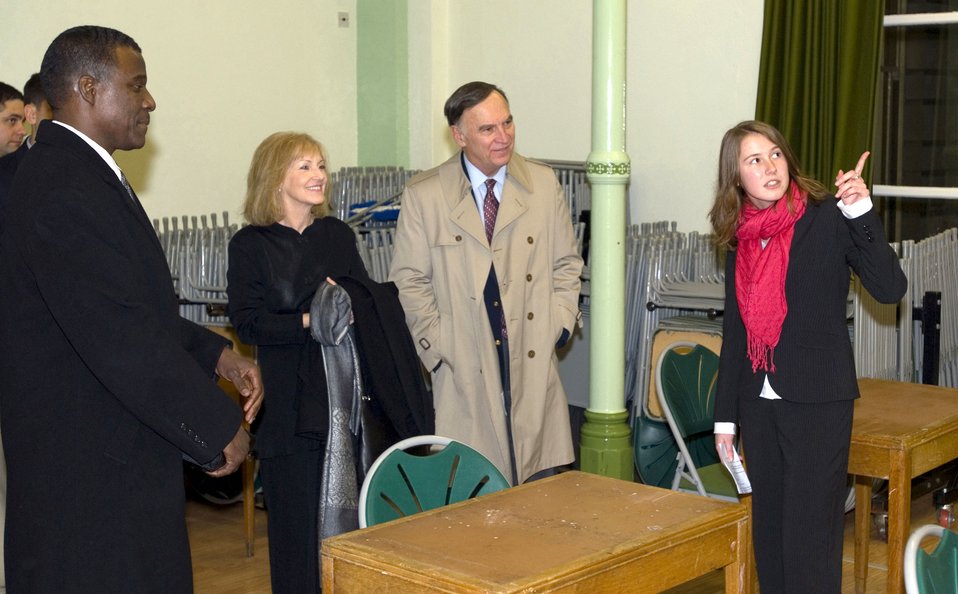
USAFE commander visits units in England

Katie Ruddey (right), a student at Recombe College, gives a tour of the school Jan. 10 to Gen. William T. Hobbins, U.S. Air Forces in Europe command (center), his wife Robbin Hobbins, and Chief Master Sgt. Gary Coleman, USAFE command chief master sergeant.